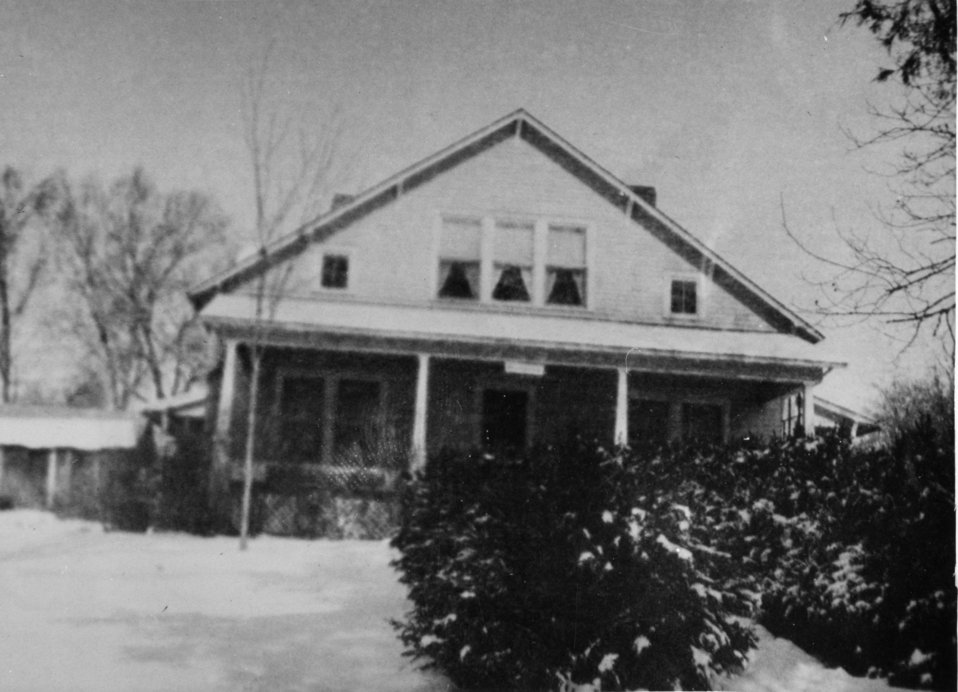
Early settlers at Oak Ridge